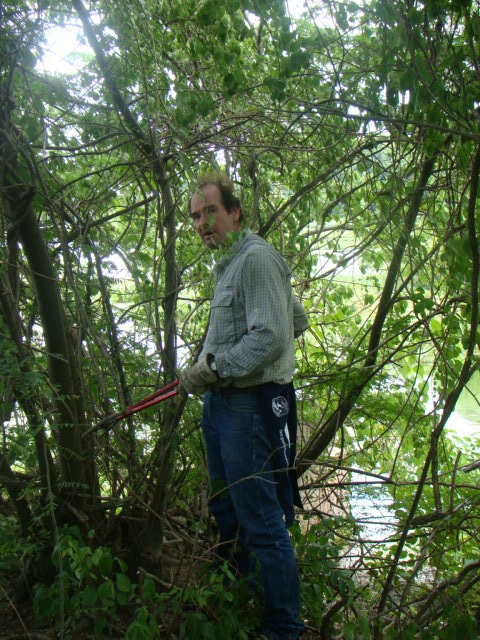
Get Your Goose On!

Jeff Cooney cutting a window through invasive vine. GYGO! at John Heinz NWR.